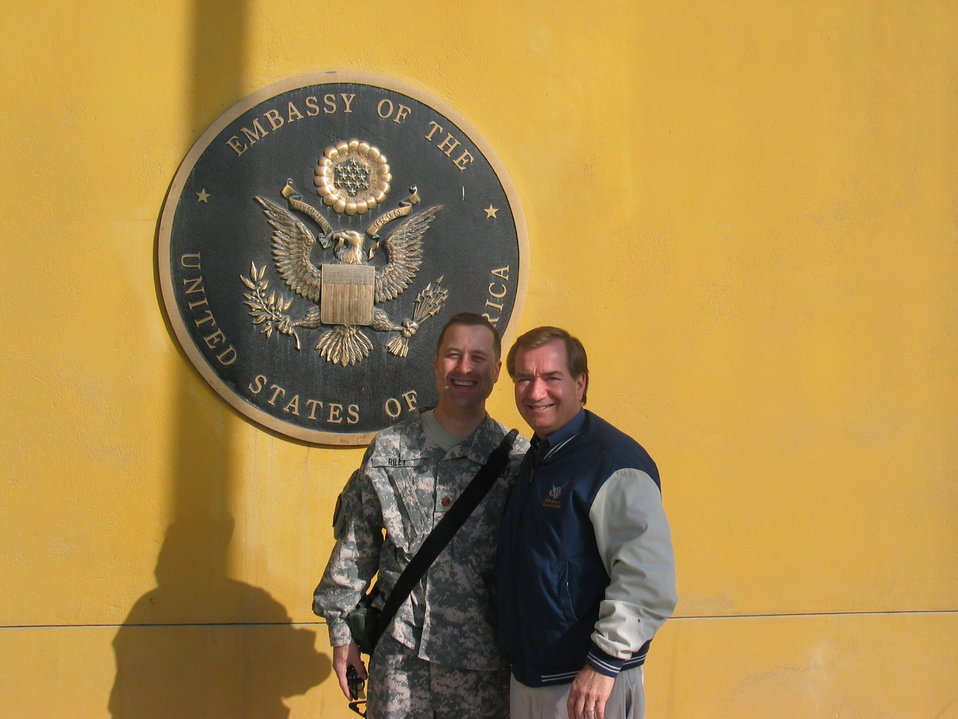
CODEL Berman